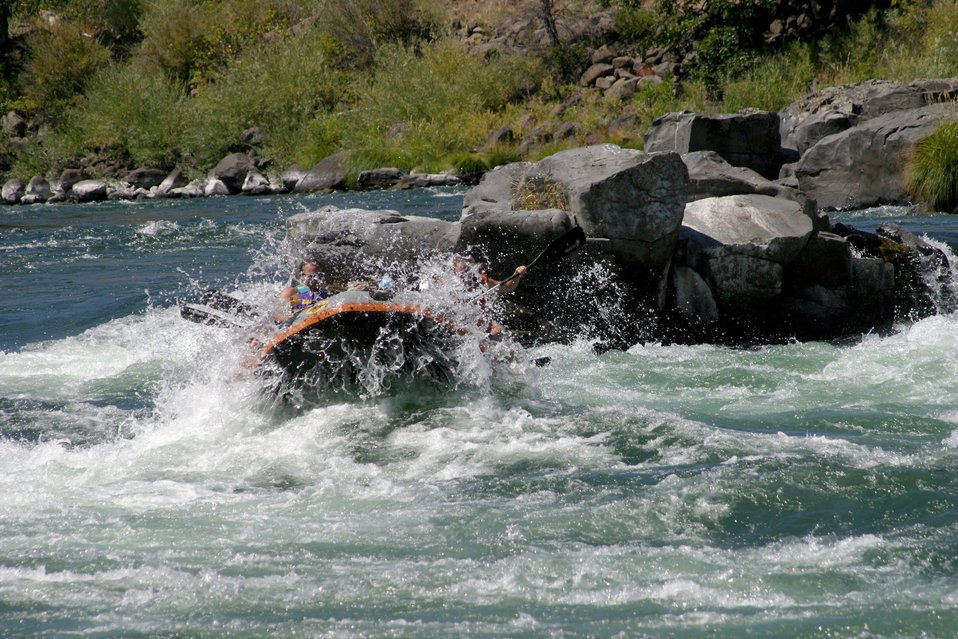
Wapinitia Rapids class III, has large roller coaster waves. 7/26/03 Pelton Dam 3600 cfs: Moody Rapids 4300 cfs.